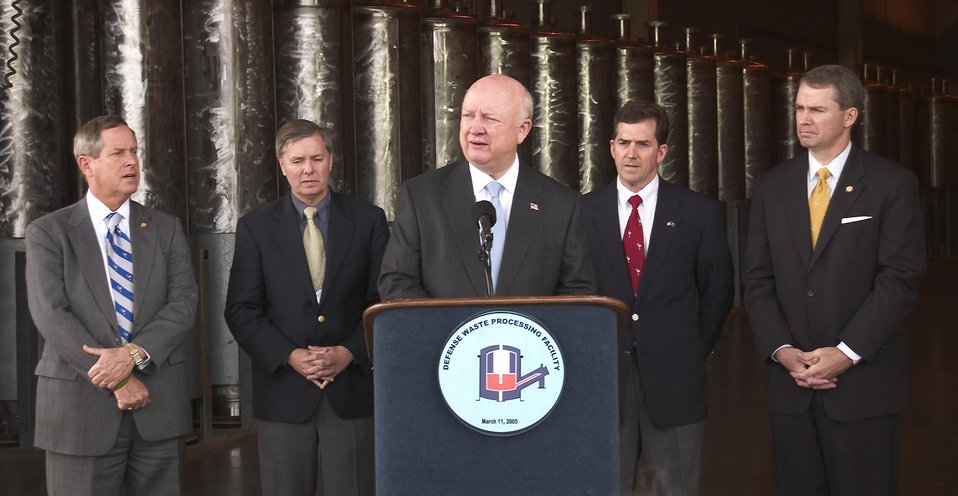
SECRETARY OF ENERGY BODMAN, AT THE PODIUM OF THE SAVANNAH RIVER SITE'S DEFENSE WASTE PROCESSING FACILITY, MARCH 11, 2005.

WITH THE SECRETARY ARE SOUTH CAROLINA U.S. REP. JOE WILSON, U.S. SENATORS FROM SC, LINDSEY GRAHAM AND JIM DEMINT AND SOUTH CAROLINA U.S. REP. GRESHAM BARRETT. BEHIND THEM ARE CANISTERS THAT ARE USED TO STORE THE VITRIFIED GLASS WASTE. THE PURPOSE OF THE DWPF IS TO IMMOBILIZE APPROXIMATELY 37 MILLION GALLONS OF HIGH LEVEL RADIOACTIVE WASTE FROM UNDERGROUND TANKS AT THE SRS. THE WASTE IS VITRIFIED INTO A DURABLE BOROSILICATE GLASS, POURED INTO STAINLESS STEEL CANISTERS AND STORED FOR EVENTUAL DISPOSAL IN A PERMANENT REPOSITORY.